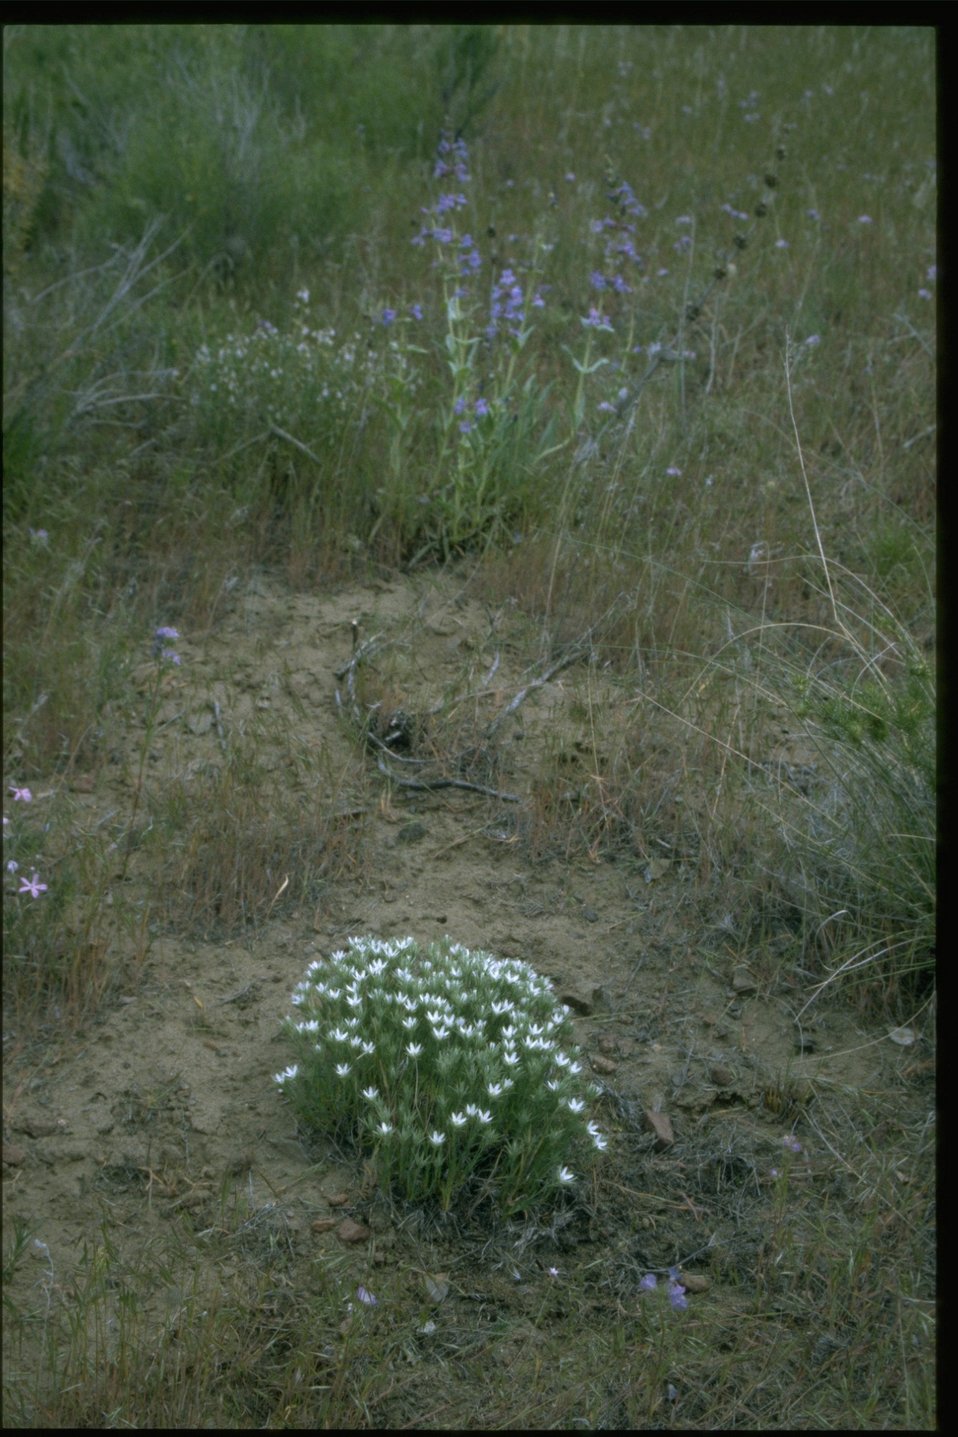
Farshot of Franklin's sandwort (Arenaria franklinii) habitat.